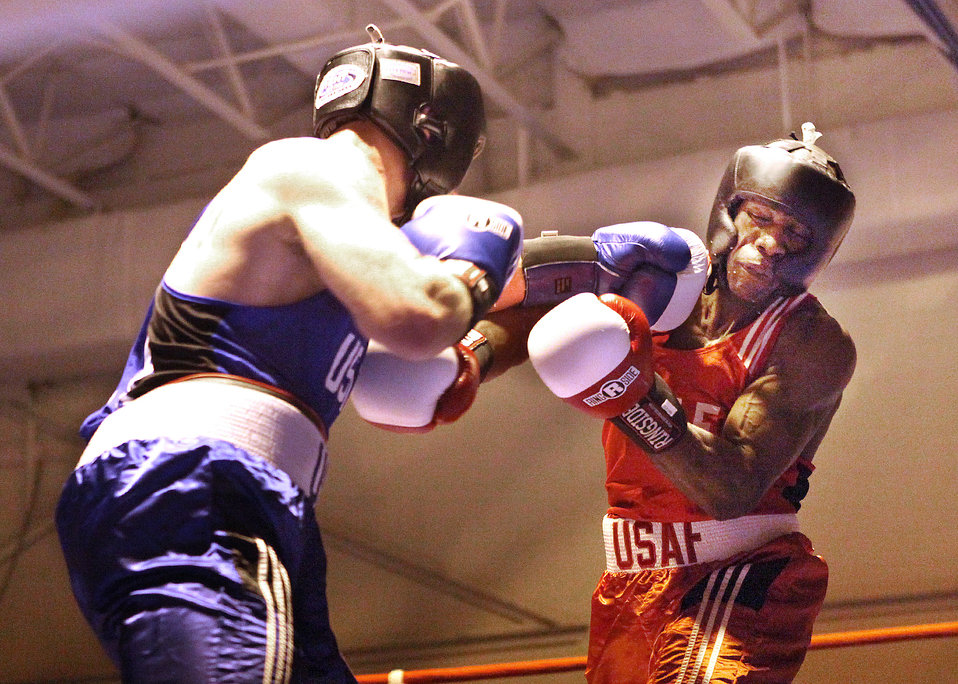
Air Force Box-offs

Light heavyweights Larry Hampp (left) and Gary Griffin compete during the Air Force Box-off tournament Jan. 22, 2011, at Lackland Air Force Base, Texas. Hampp won a unanimous decision from the judges. Hampp is from Ellsworth Air Force Base, S.D., and Griffin is assigned to Stewart Air National Guard Base, N.Y.